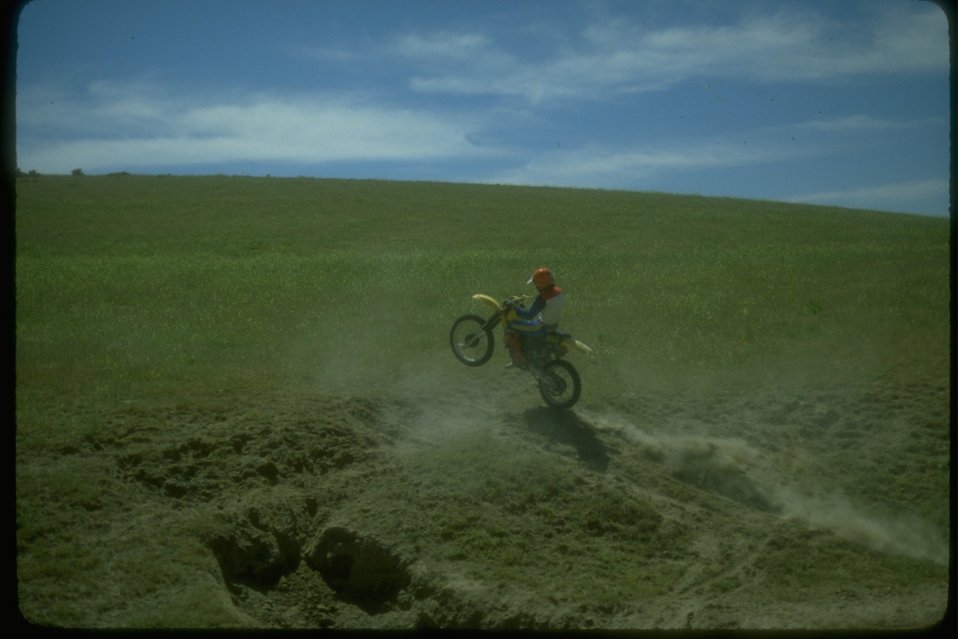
Dirt bike rider jumping his bike over a small hill in the rangeland.